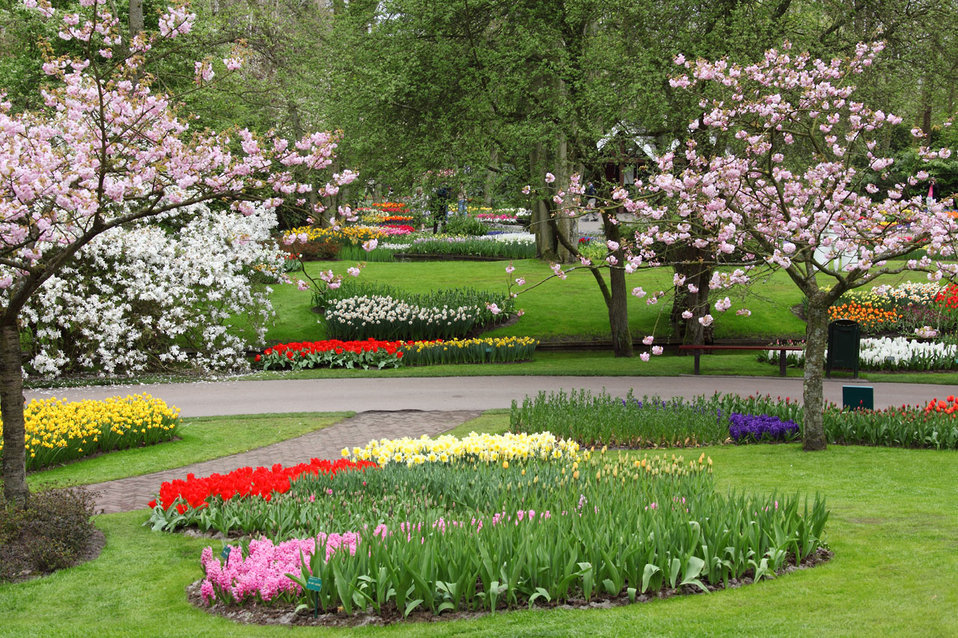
Spring garden

Keukenhof gardens in spring.